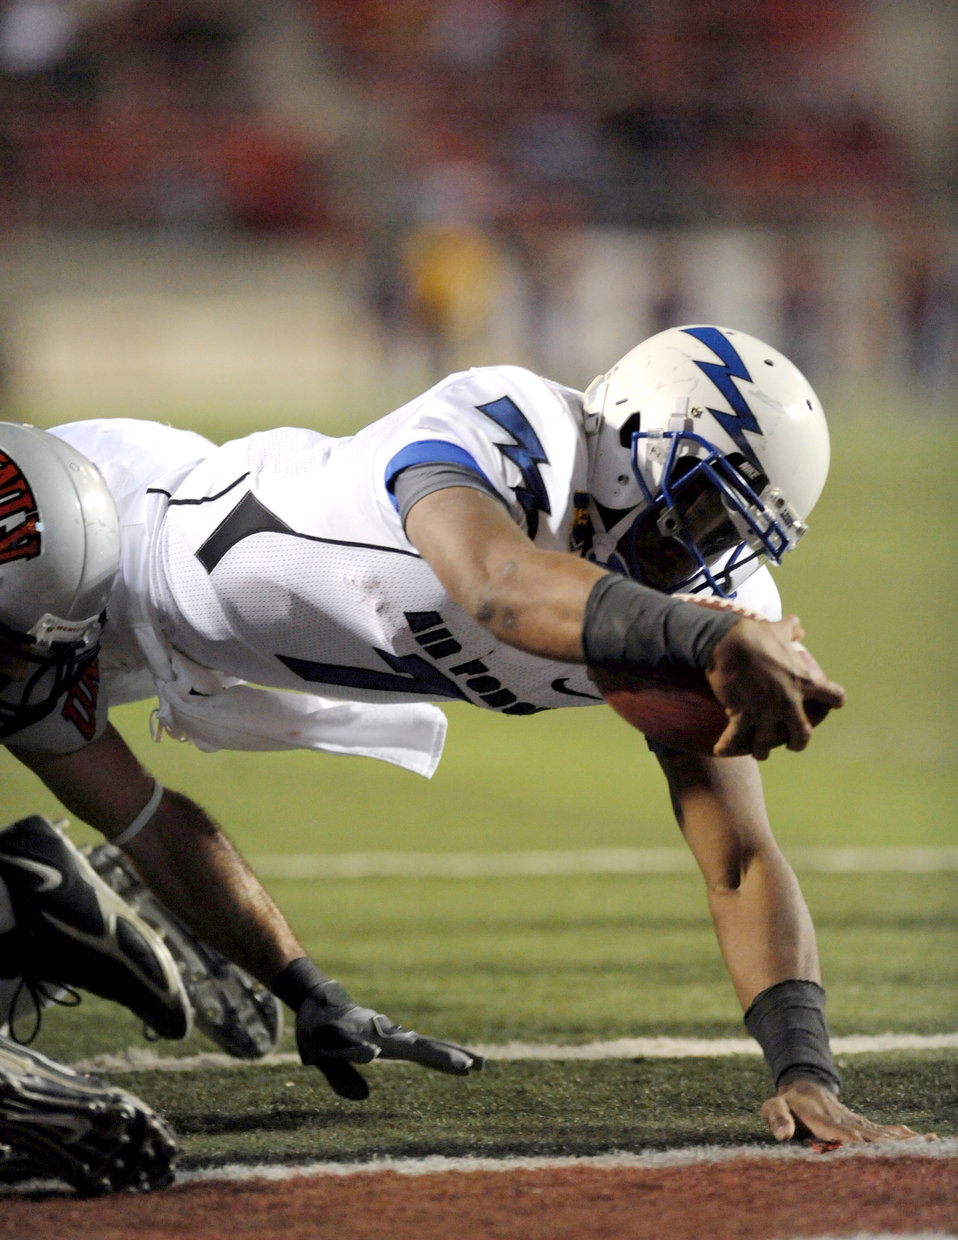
Reaching for the goal

Air Force Academy quarterback Tim Jefferson dives for a touchdown in the Falcons' final game of the regular season against University of Nevada, Las Vegas Nov. 18, 2010, in Las Vegas. Jefferson threw for 111 yards and ran for 64, scoring three rushing touchdowns to lead the Falcons to a 35-20 victory.